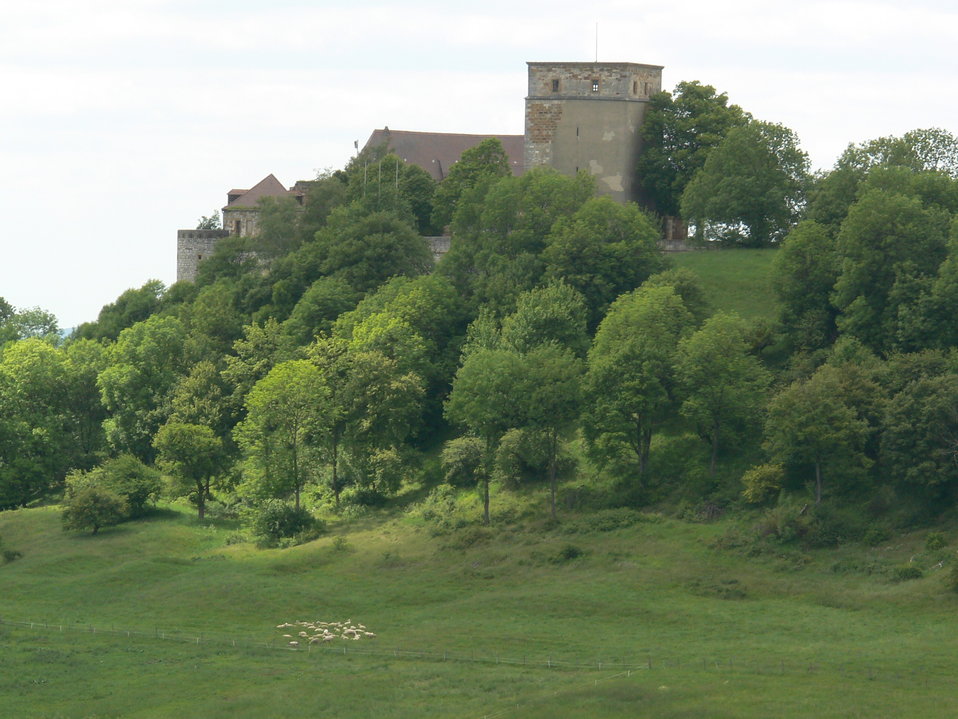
106 Giechburg von Gügel